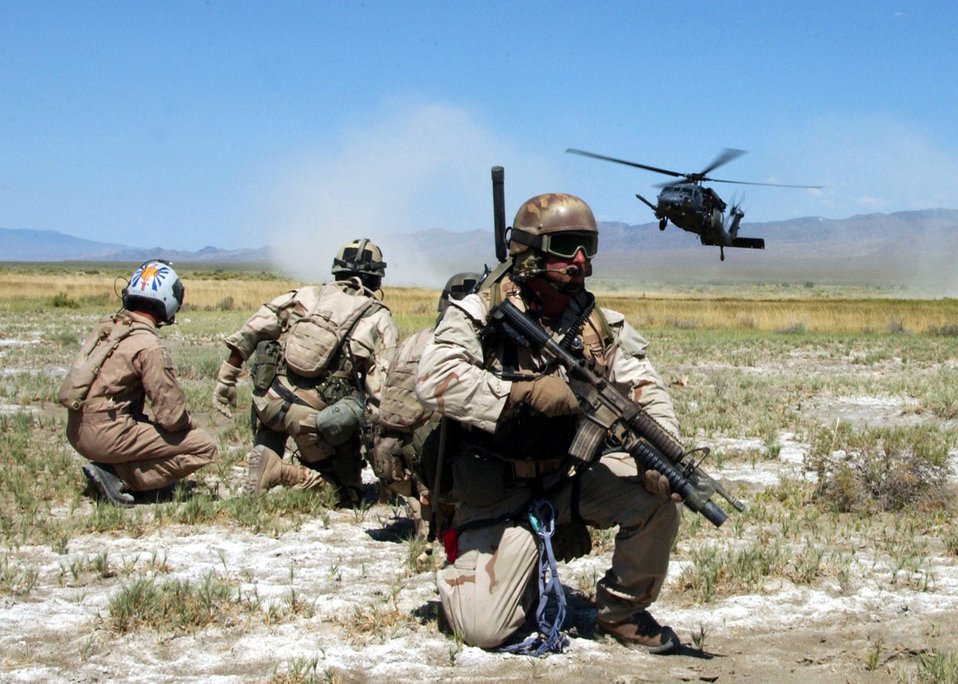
Desert landing

FALLON, Nev. -- U.S. Air Force pararescuemen and a simulated “survivor” watch as an HH-60G Pave Hawk helicopter comes in for a landing here recently. The multiservice, multinational training exercise prepares combat search and rescue teams to extract downed personnel in a variety of environments and situations.